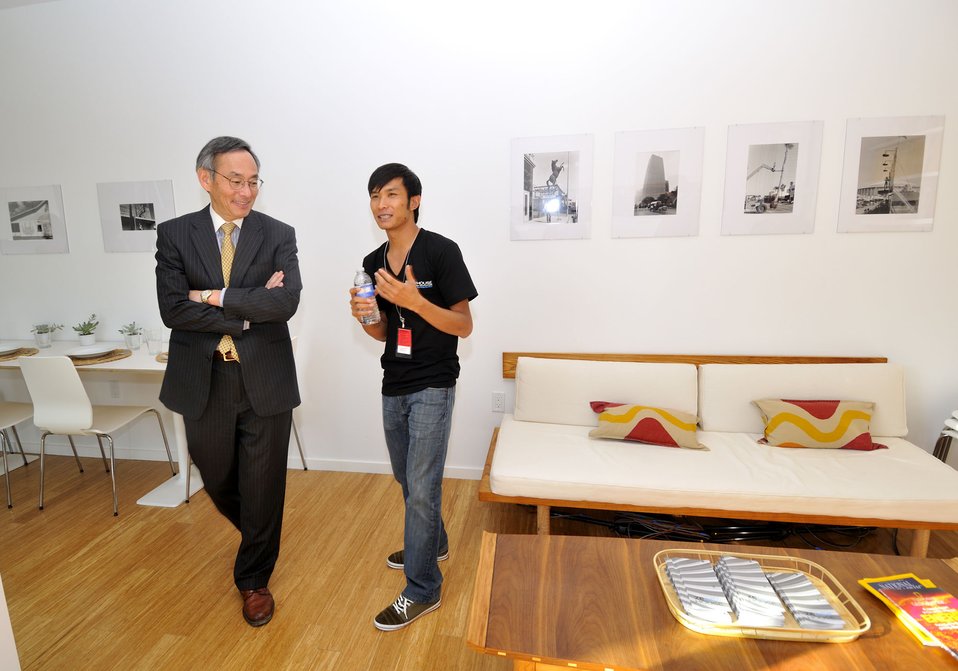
Solar Decathlon 2009 on the National Mall, with Sec. Chu

Solar Decathlon 09